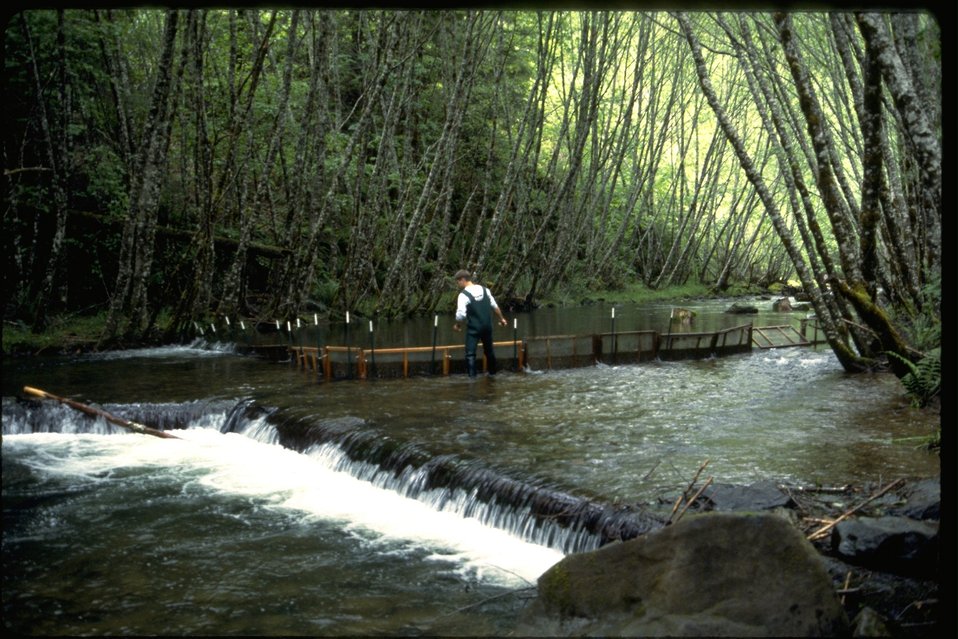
Catching smolts in an anadromous fish study.